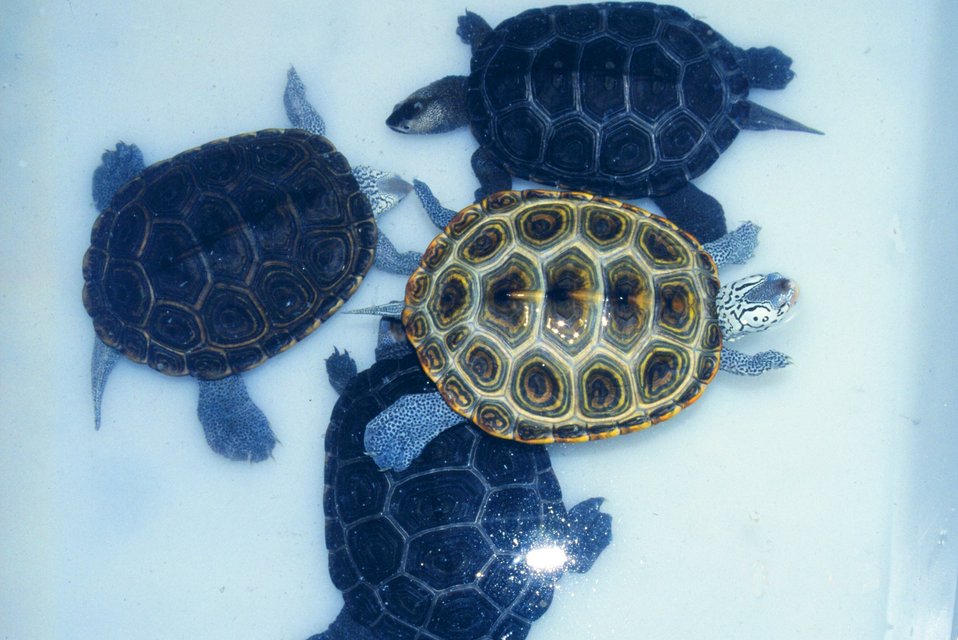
Female diamondback terrapins, Malachlenys terrapin.